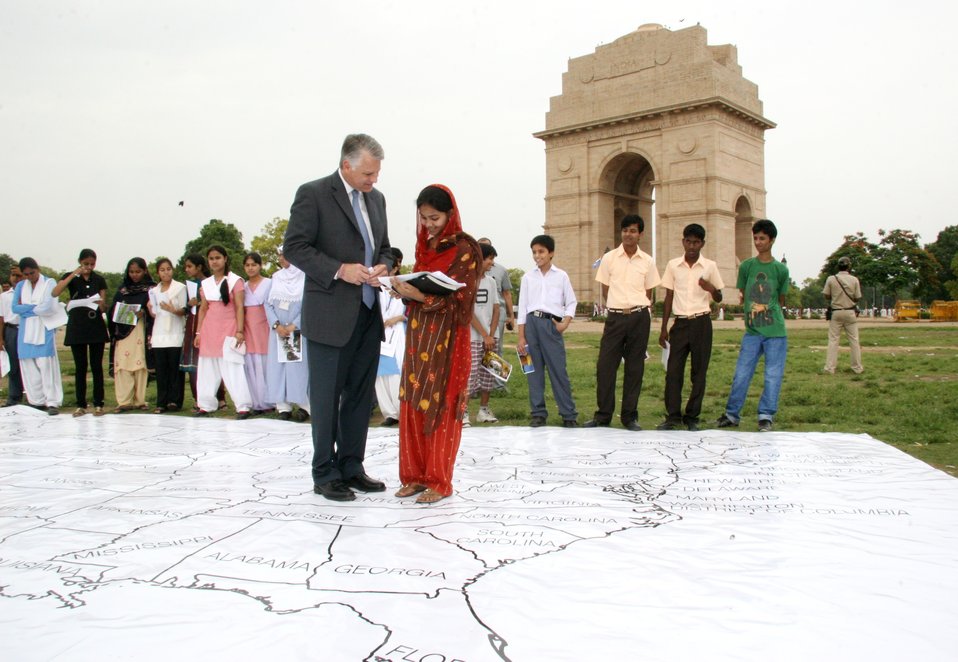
Ambassador Roemer Speaks With Students

U.S. Ambassador to India Timothy J. Roemer interacts with students during a farewell event at New Delhi’s India Gate, on June 30, 2011.